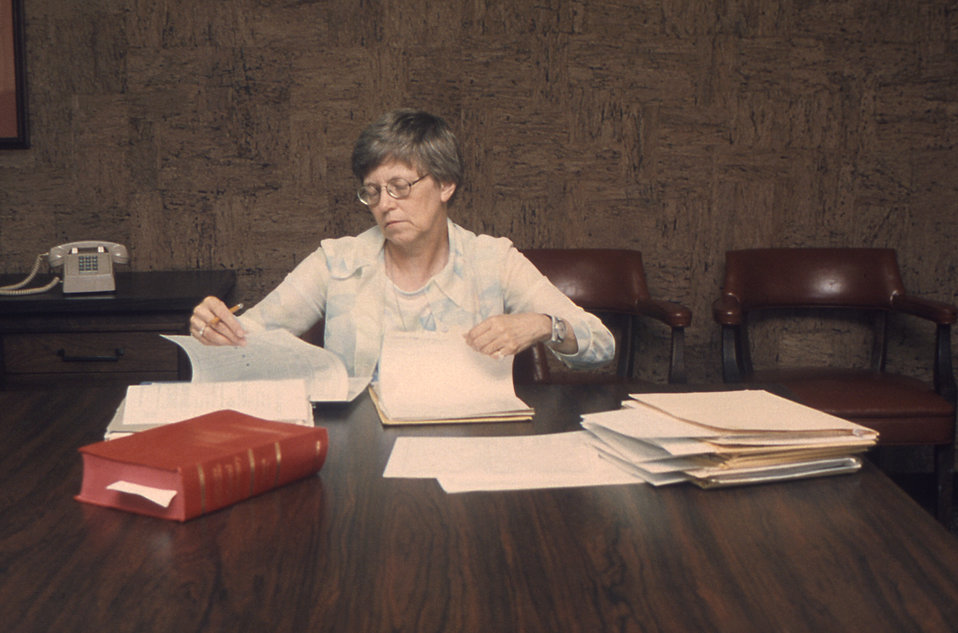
This historic image depicted a Centers for Disease Control (CDC) public health adviser working on a pilot study known as SENIC (Study on the Efficacy of Nosocomial Infection Control), which measured the accuracy of a system, designed by Robert W. Haley, M.D., that detected hospital-acquired infections through the analysis of medical records. SENIC was ultimately used to measure the change of infection rates in a random sample of U.S. hospitals. In this picture she appeared to be doing an in-line quality control analysis, by comparing the agreement of duplicate reviews of the same medical records.